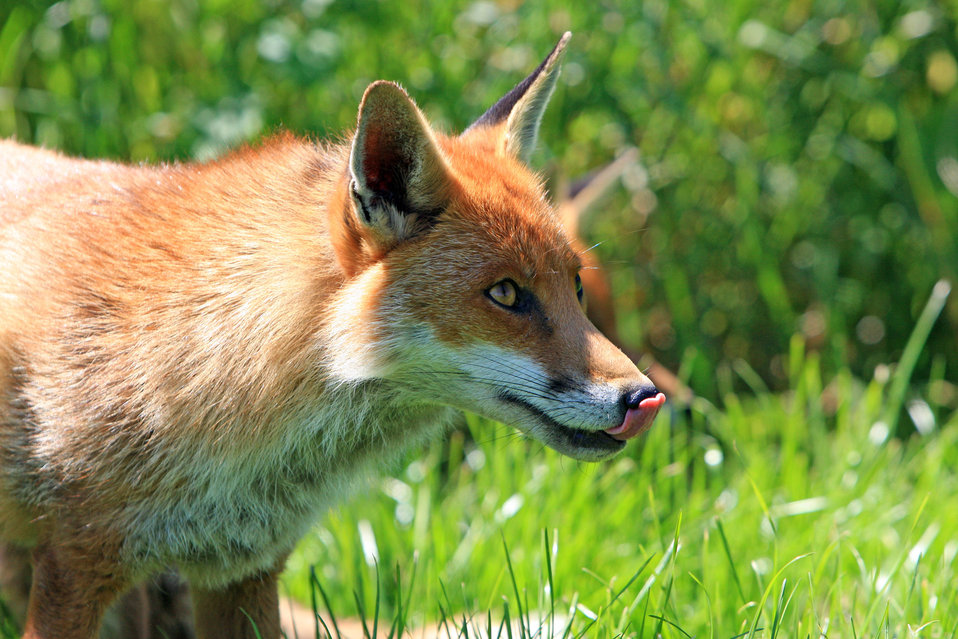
Fox licking lips

Close-up head portrait of a red fox licking lips.